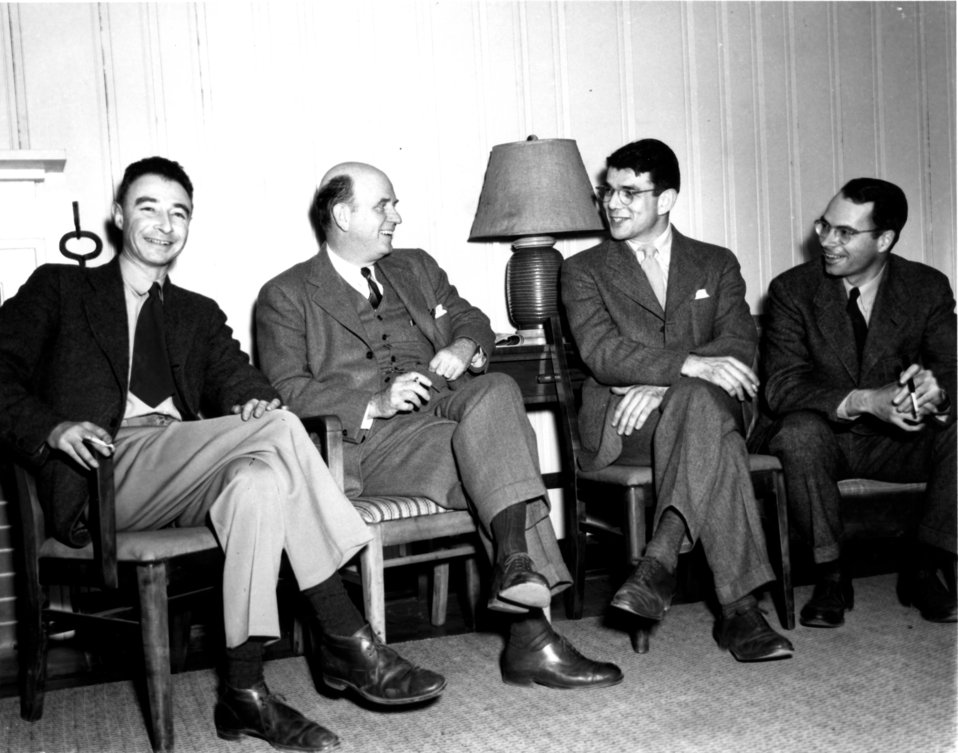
Notable persons at Oak Ridge